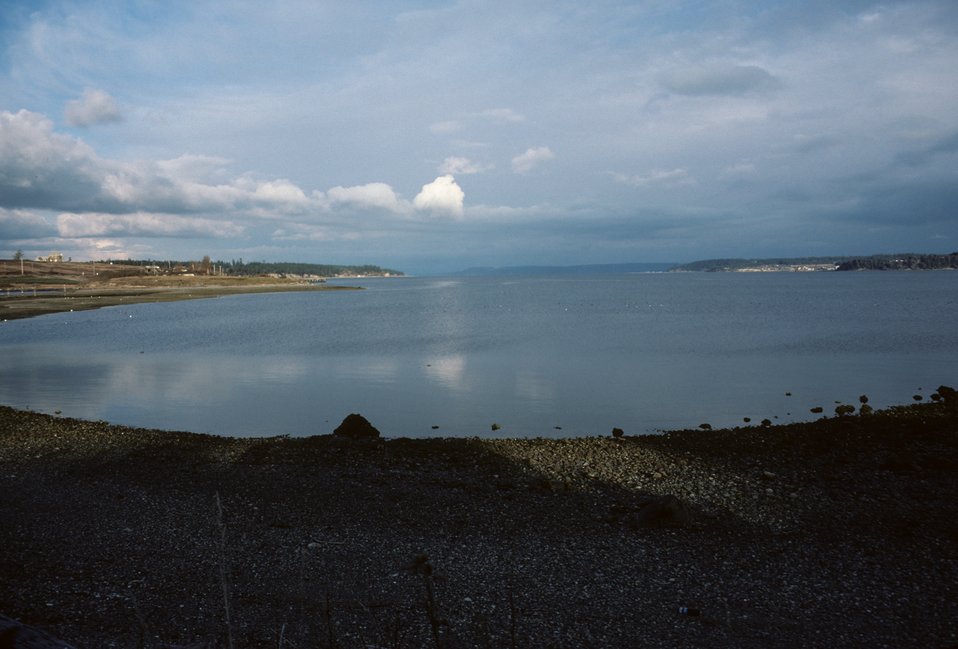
A scene along the Washington coast.